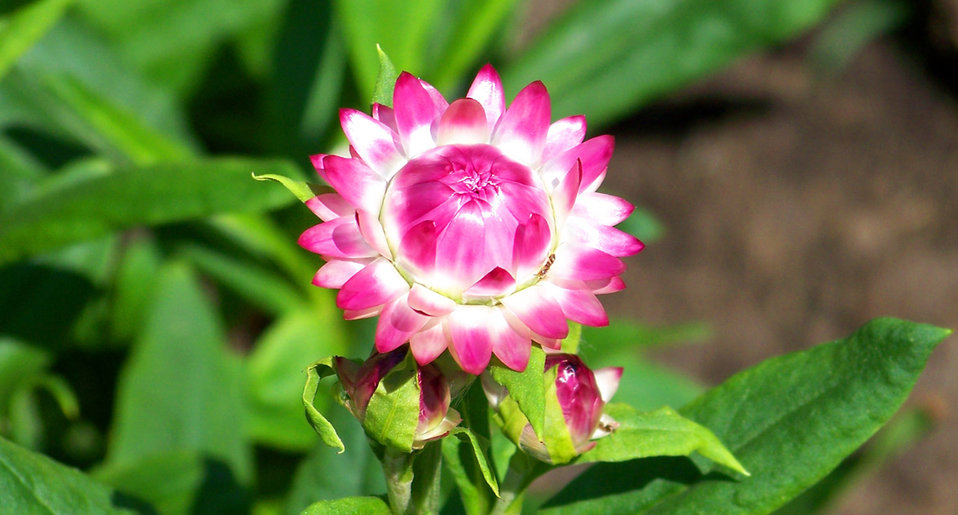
Flower

Some kind of flower.